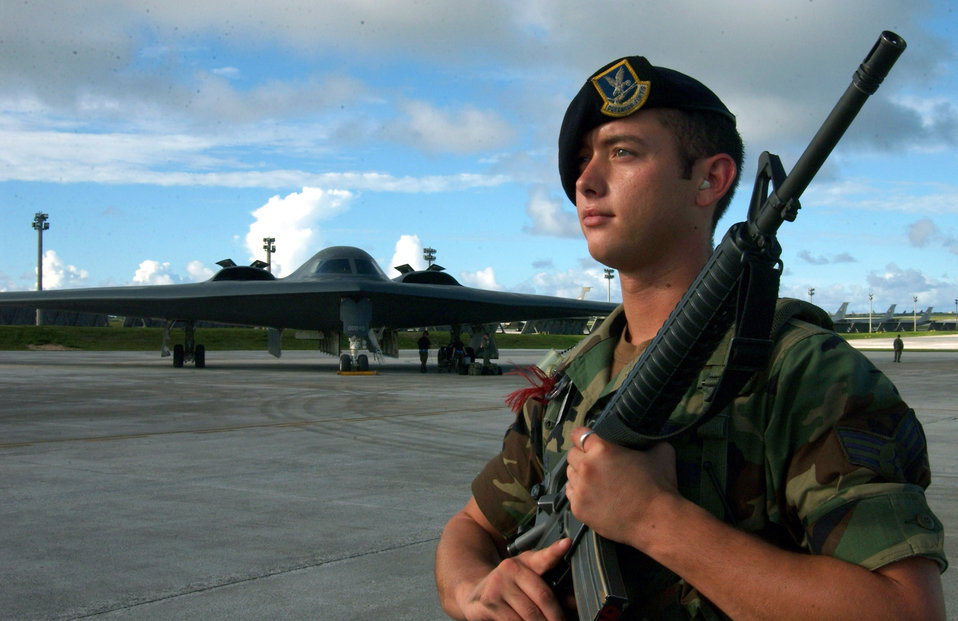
Guarding the point

ANDERSEN AIR FORCE BASE, Guam (AFPN) -- Senior Airman John Key guards an entry-control point near a B-2 Spirit bomber recently during a Coronet Bugle 49 exercise here. Airman Key is assigned to the 509th Security Forces Squadron at Whiteman Air Force Base, Mo. He is deployed supporting B-2 operations as part of Air Combat Command's ongoing global power missions. The missions enable aircrews to train for long flights from the United States to overseas locations.